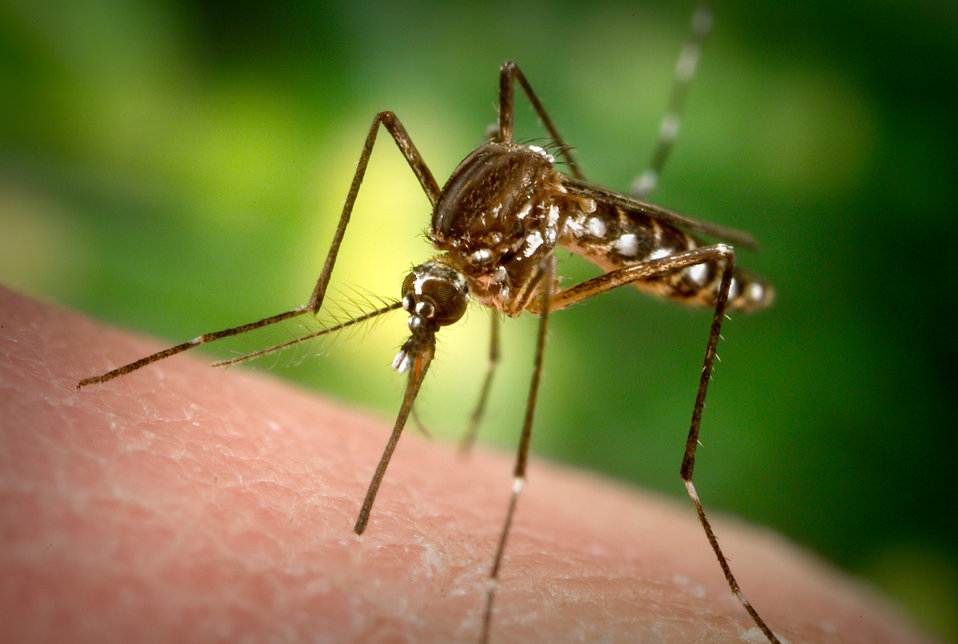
This 2006 photograph depicted a female Aedes aegypti mosquito as she was in the process inserting her fascicle through the skin surface of her host. She then proceeded to obtain a "blood meal", which normally would be from an unsuspecting host, but in this case, the CDC's biomedical photographer, James Gathany, had volunteered his own hand in order to entice the insect to alight, and feed. As it would fill with blood, the abdomen would become distended, thereby, stretching the exterior exoskeletal surface, causing it to become transparent, and allowing the collecting blood to become visible as an enlarging red mass. See PHIL # #8923, for this mosquito's appearance in its abdominally-distended state.